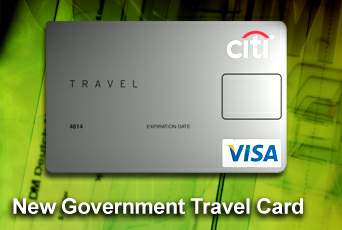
New government travel card

Airmen are being issued the new Citibank government travel card, which will look like this example. Distribution will begin Aug. 13.